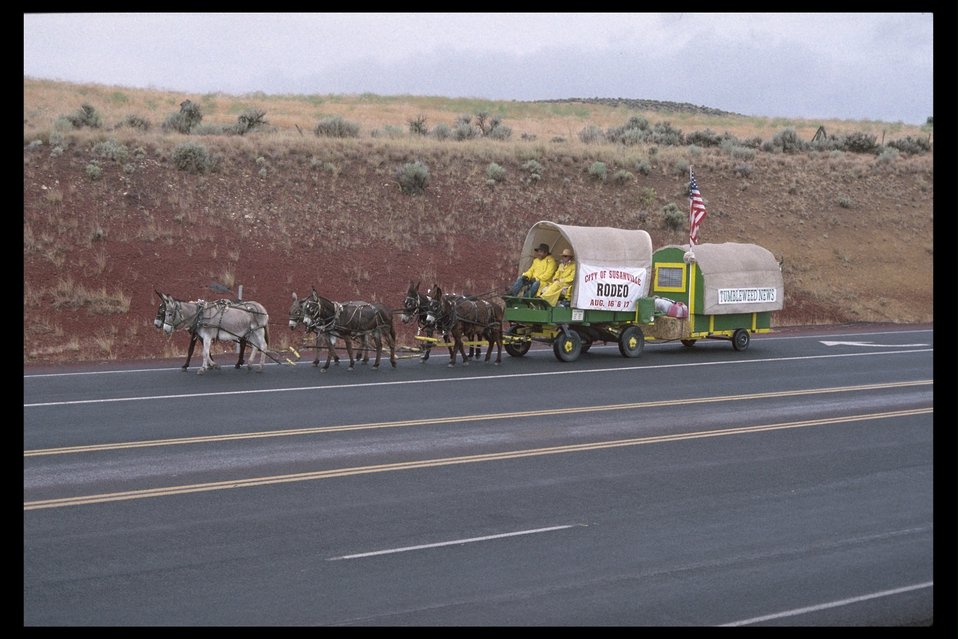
As publicity for Wild Horse and Burro program, adopted wild burros pull wagons on U.S. Highway 20.